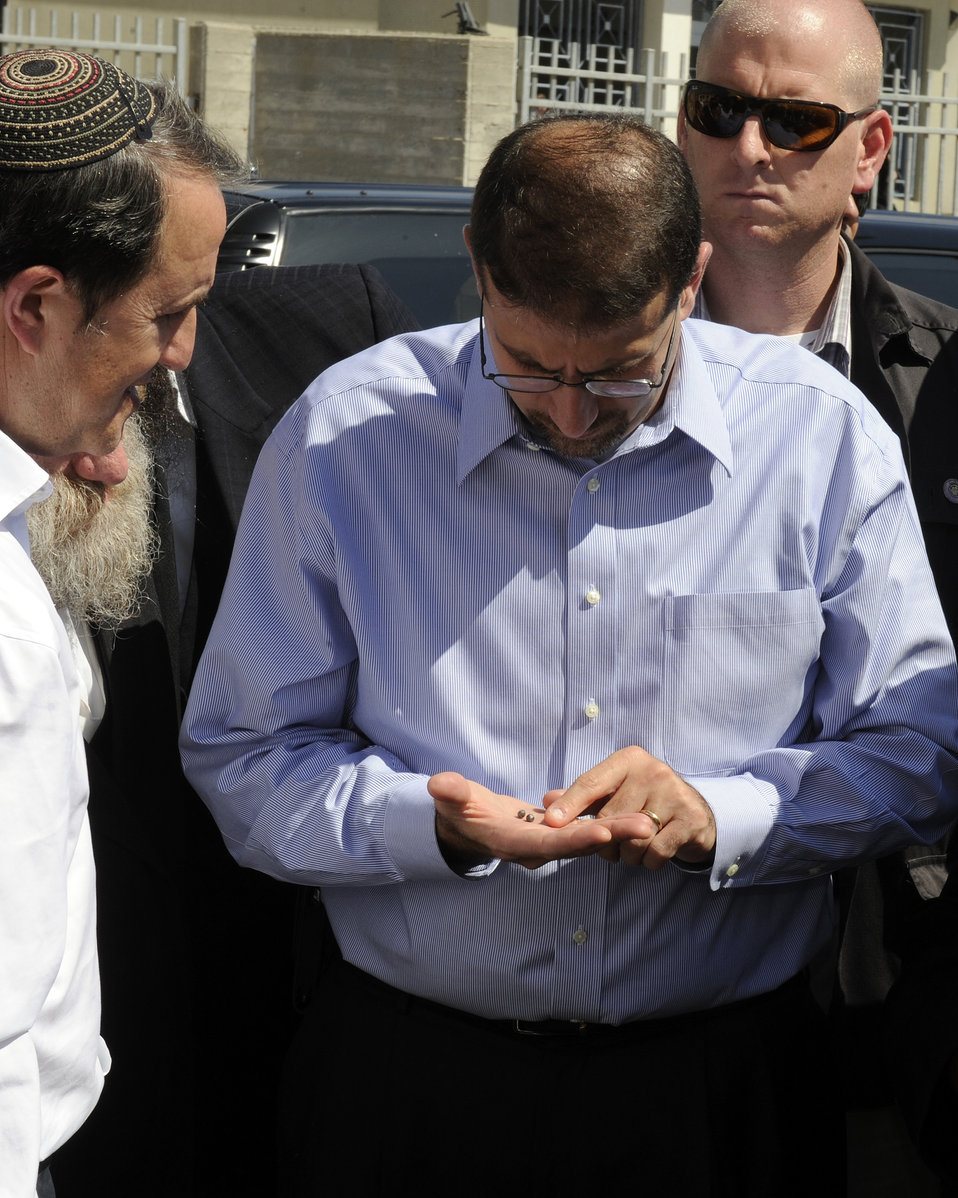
Ambassador Shapiro Tours the Jewish Seminary Where Two Grad Missiles Exploded and Wounded People

U.S. Ambassador to Israel Dan Shapiro tours the Jewish seminary where two Grad missiles, fired from the Gaza Strip, exploded and wounded several people, in Ashdod, Israel, on August 23, 2011. State Department photo/ Public Domain]